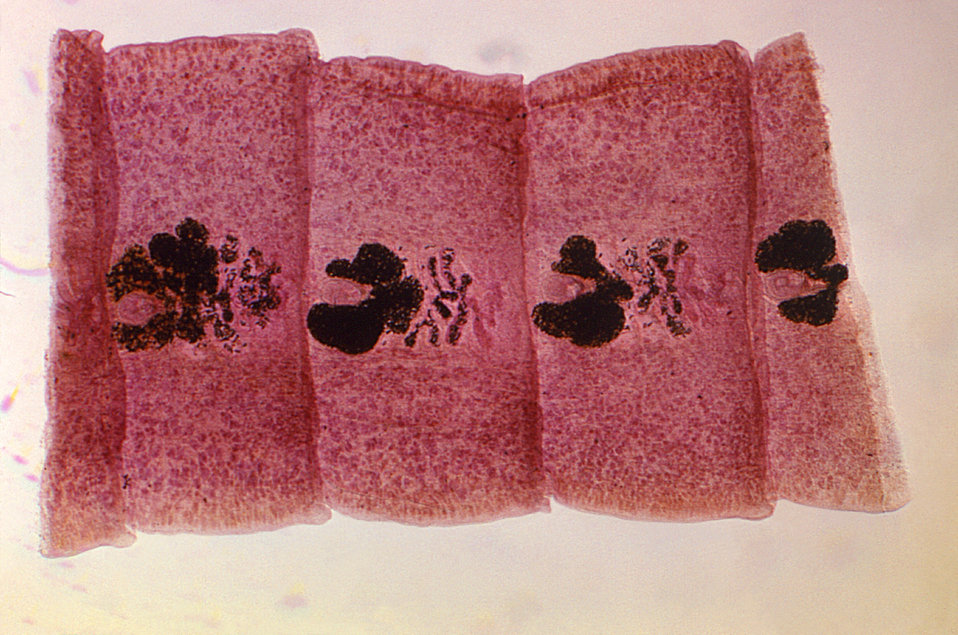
Gravid proglottids of Diphyllobothrium latum.